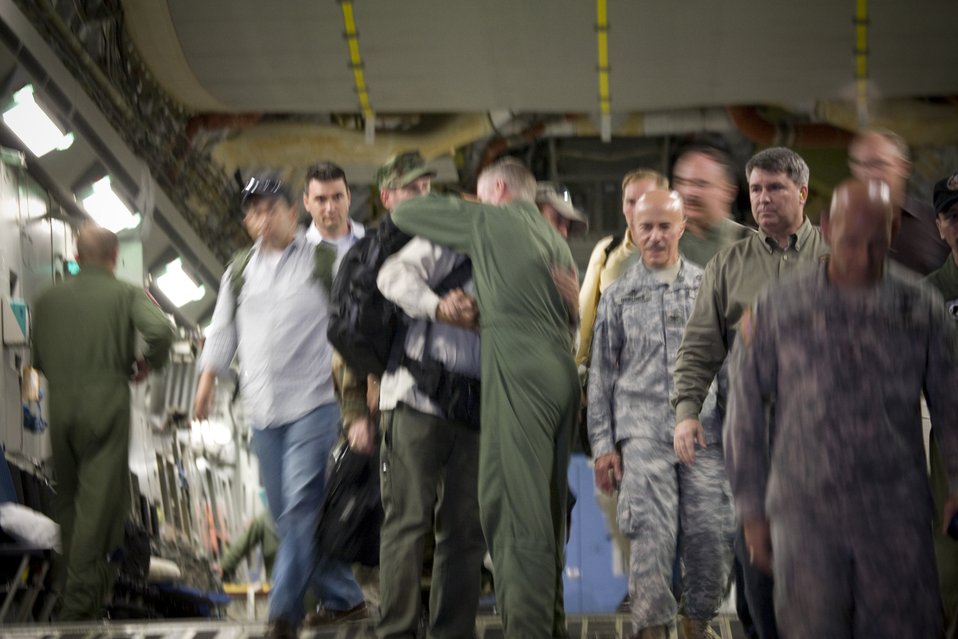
Hostages Arrive in U.S.

At the top of the cargo ramp of a C-17 Globemaster III, Keith Stansell hugs one of the people who helped him return to the U.S. at Lackland Air Force Base, Texas, July 2. The contractor was one of three Americans rescued after being held captive by the Revolutionary Armed Forces of Colombia for five years.